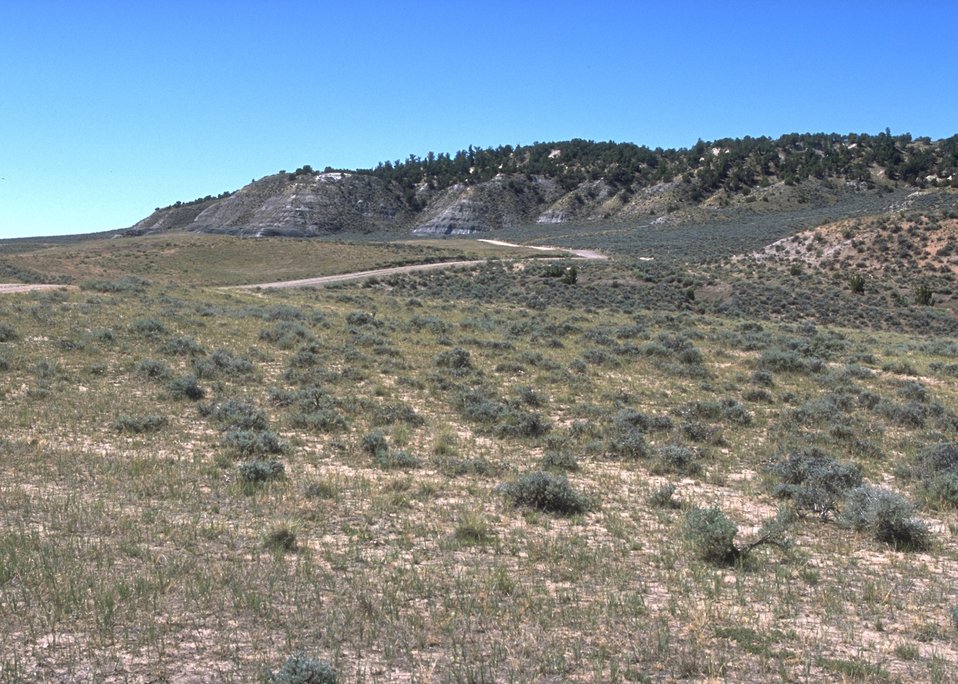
General view of Cedar Ridge Paleo area, Worland Field Office.